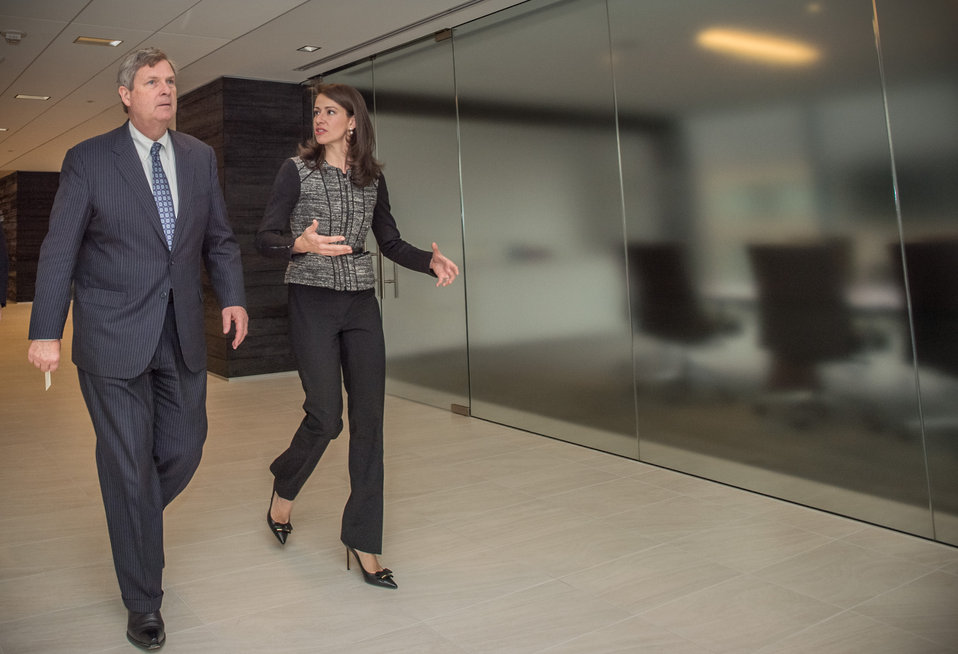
U.S. Department of State Acting Chief of Protocol Natalie Jones speaks with Agriculture Secretary Tom Vilsack at the Share the Season event organized by the U.S. Department of State Office of the Chief of Protocol Diplomatic Partnership Division at the Business Roundtable (BRT) in Washington, D.C. on Thursday, Nov. 21, 2013. BRT is a non-profit association of chief executive officers of leading U.S. companies that encourages embassies and diplomats to be active in local community service projects.